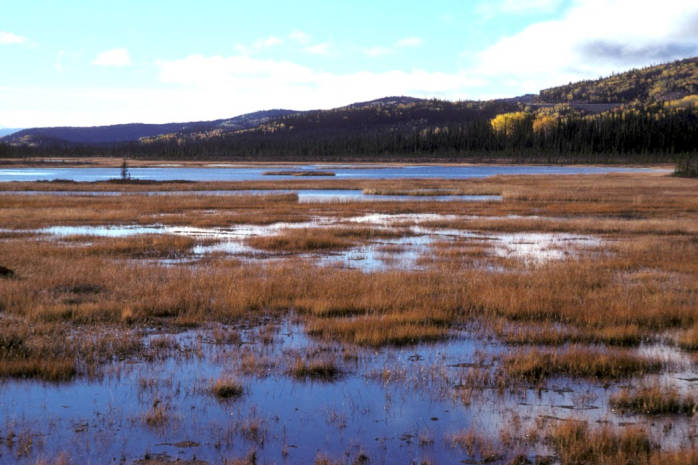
Scenic View of Tetlin National Wildlife Refuge